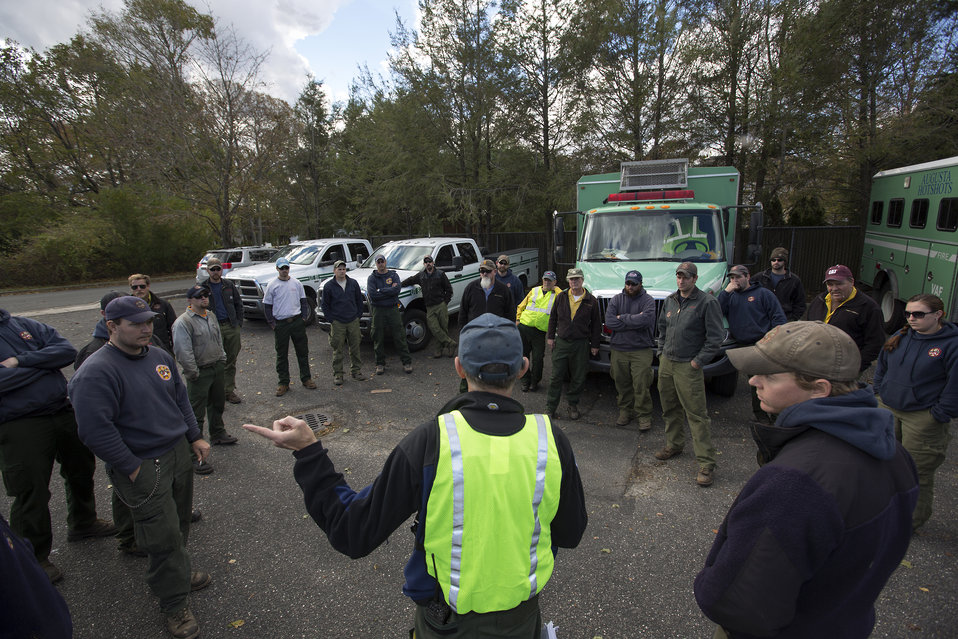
U.S. Forest Service Hot Shot crews muster for their safety brief as they prepare to help the victims of Hurricane Sandy in St. James, NY on Nov. 3, 2012. The Hotshots are from Region-8 out of Augusta Springs, VA.